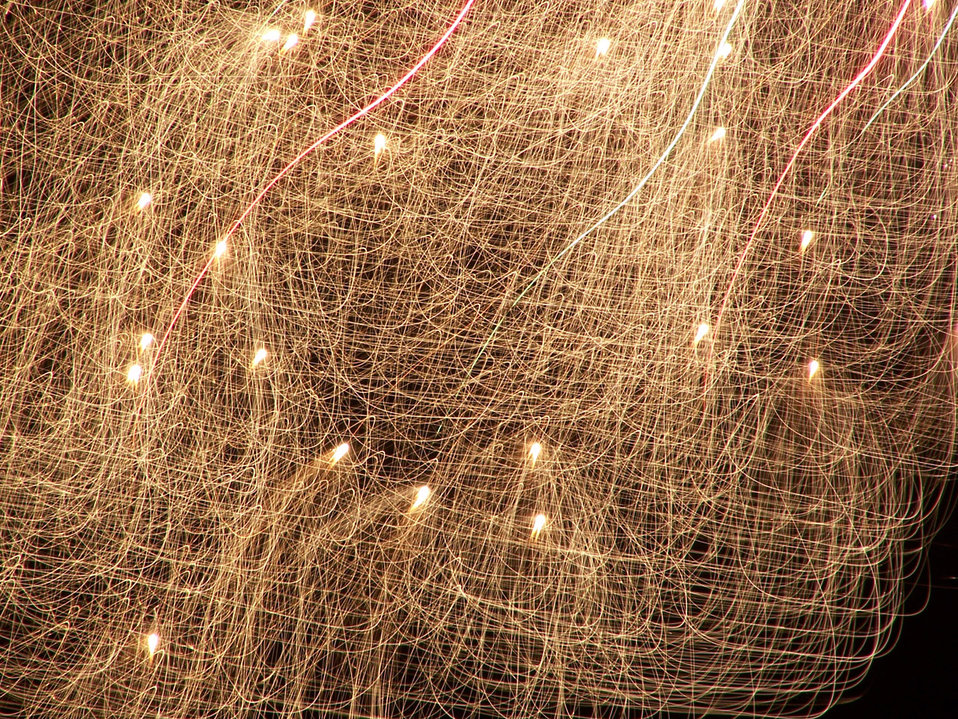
Firework display.